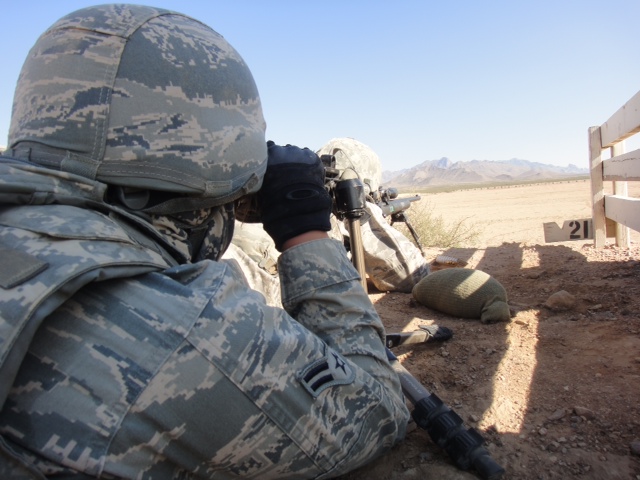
Setting her sights

Airman 1st Class Tiffani Potter, 14th Security Forces Squadron spots for Jesse Janda, 14th SFS during a field shooting exercise. Potter and Janda became sniper-certified Sept. 21, making it possible for other Airmen at Columbus Air Force Base to seek their own certification.